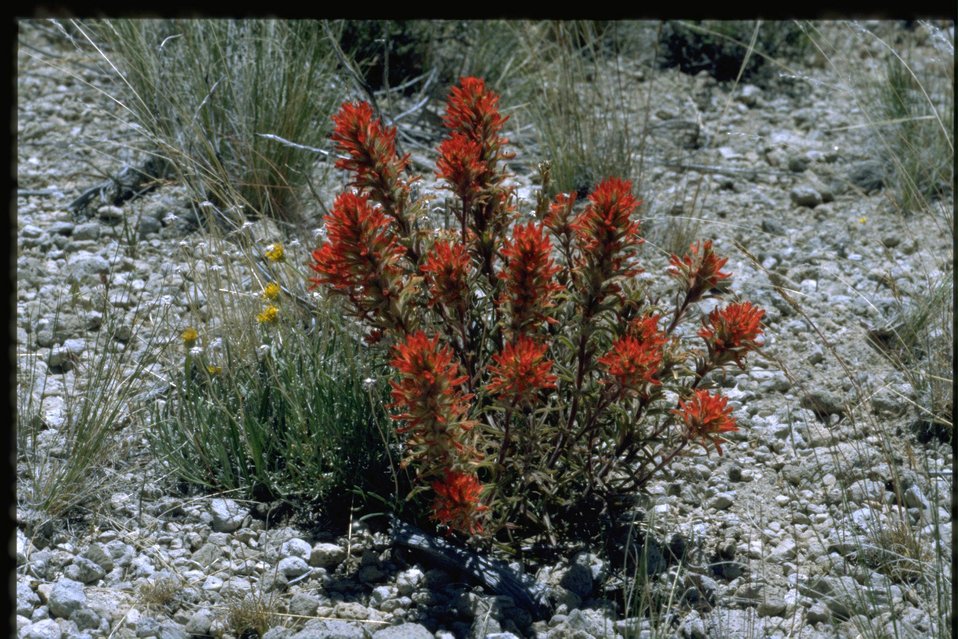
Medium shot of Indian Paintbrush habitat.